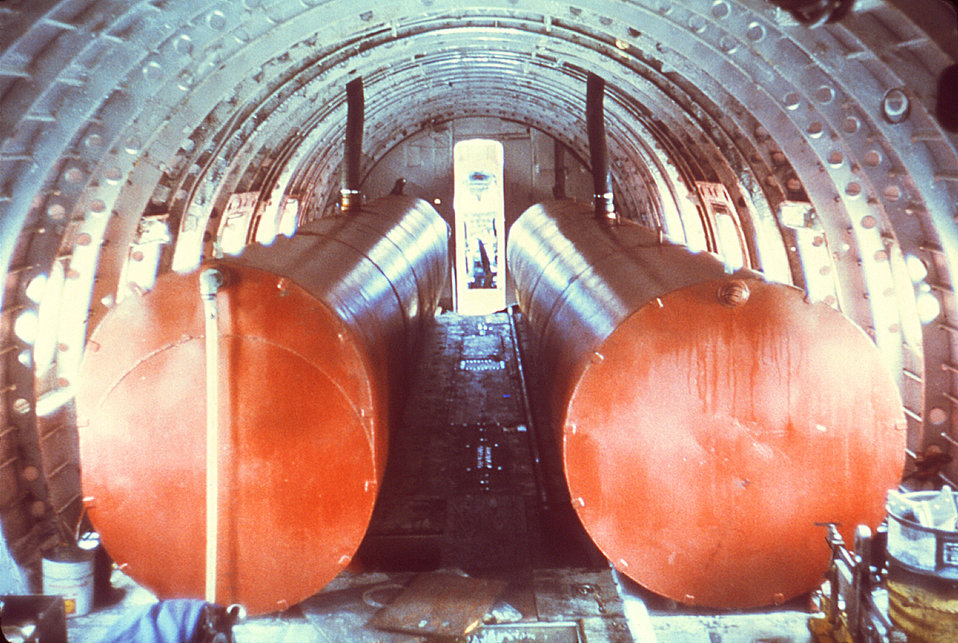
This 1978 photograph depicts the interior of a Lockheed C-121D 'Super Constellation's' fuselage containing two insecticide containers, otherwise known as the aircraft's payload, to be released as an ultra-low volume (ULV) insecticidal fog.